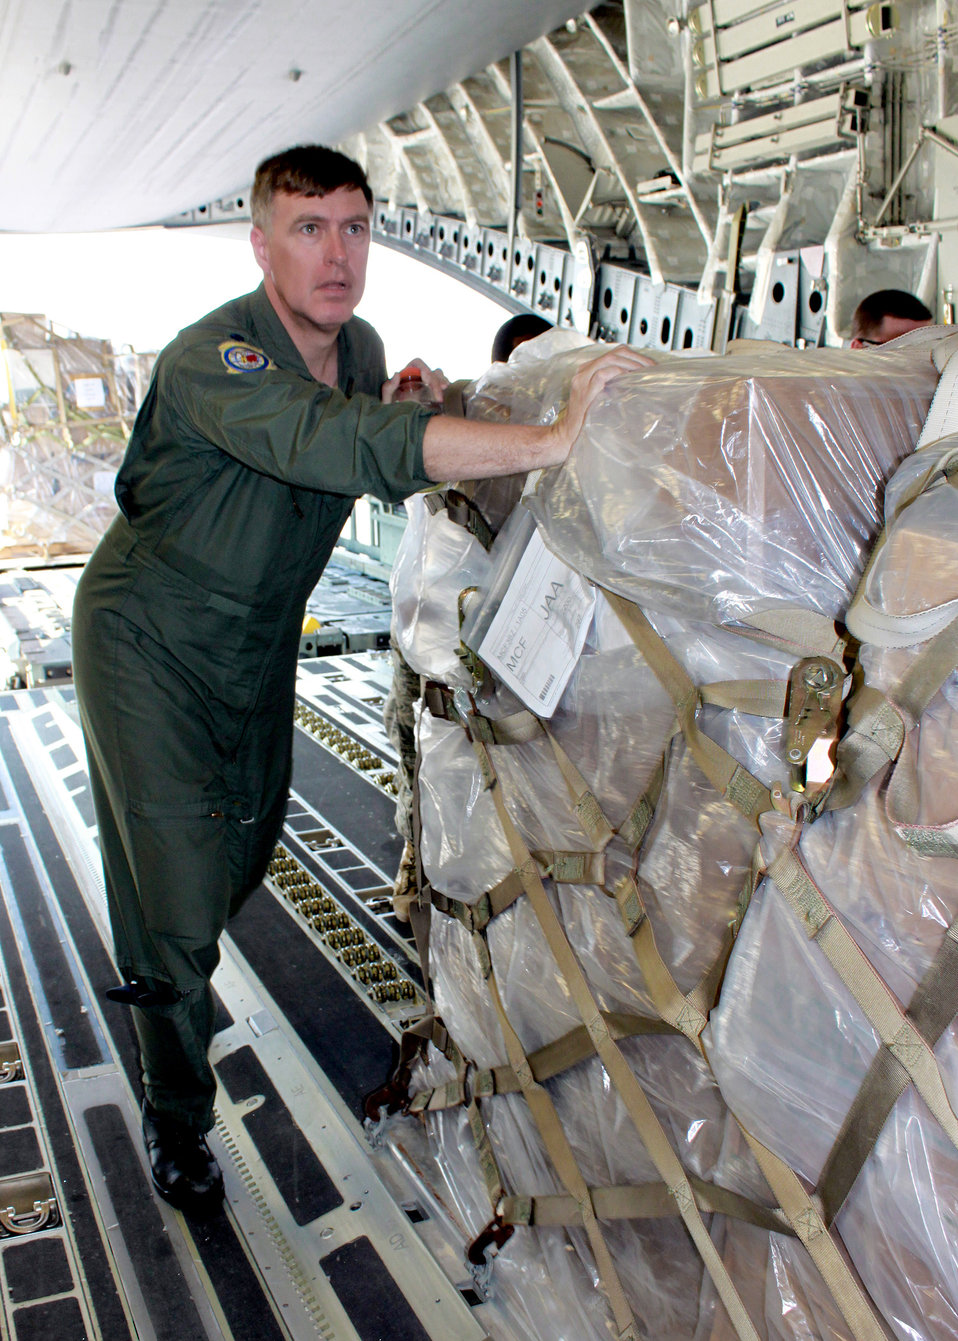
JBMDL humanitarian mission

Lt. Col. Peter Debusmann helps the aircrew push cargo palettes into place aboard the C-17 Globemaster III Feb. 18, 2011, at Joint Base McGuire-Dix-Lakehurst, N.J. The C-17 aircrew accomplished training requirements with stops at three bases to upload and download cargo under the Denton Program intended for delivery to Guyana and Afghanistan. The Denton Program authorizes the Department of Defense to transport donated assistance material, free of charge, on a space-available basis and of no cost to the government other than the cost of transportation itself. Colonel Debusmann is a 732nd Airlift Squadron pilot.